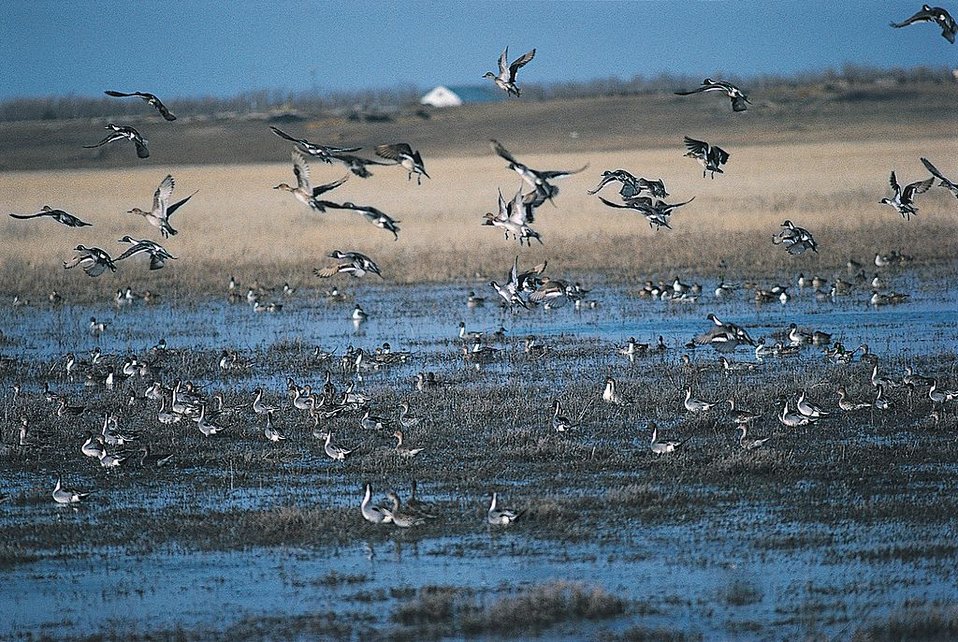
Waterfowl haven

Pintails in spring, North Dakota, by Craig Bihrle, ND Fish and Game